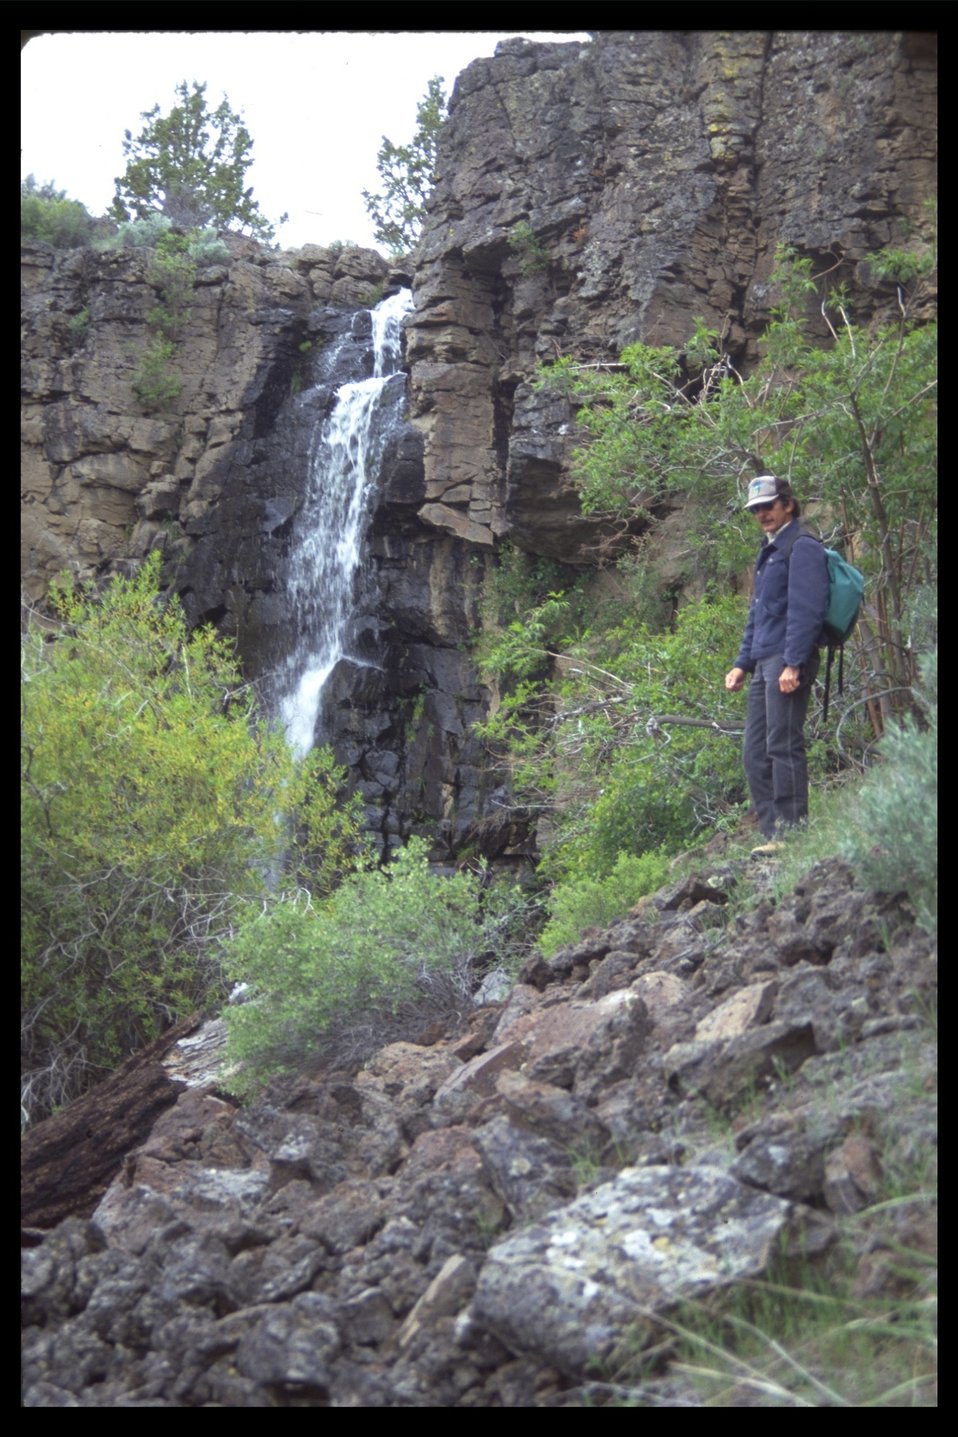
Waterfall on Rim Rock, north of Blue Bucket Creek in the Malheur/Blue Bucket area with Dave Vickstrom. (WSA 2-14)